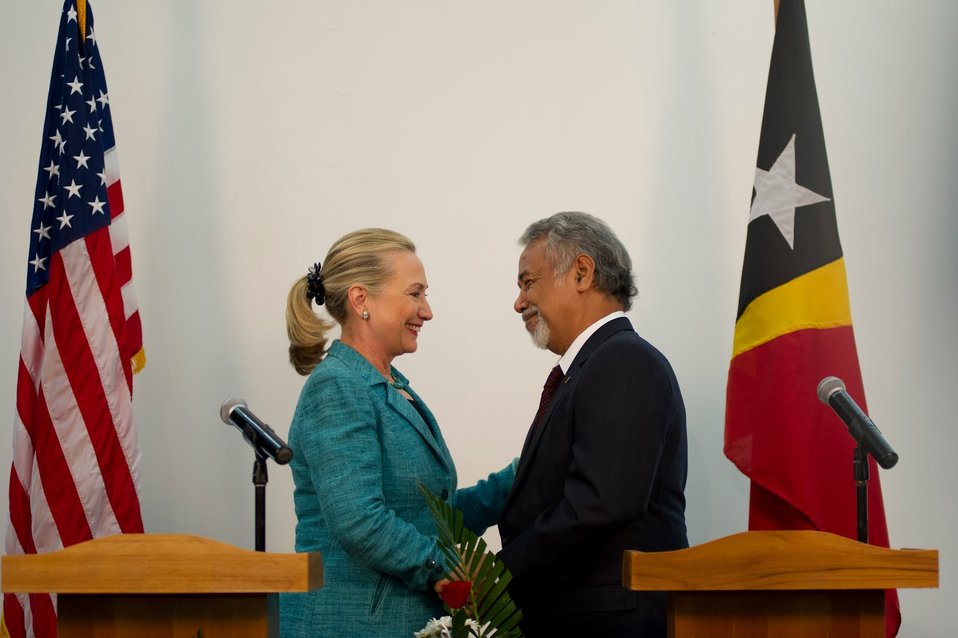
Secretary Clinton Shakes Hands With Timor-Leste's Prime Minister Gusmao

U.S. Secretary of State Hillary Clinton and Timor-Leste’s Prime Minister Xanana Gusmao wish each other well after their joint press conference in Dili, Timor-Leste, September 6, 2012.